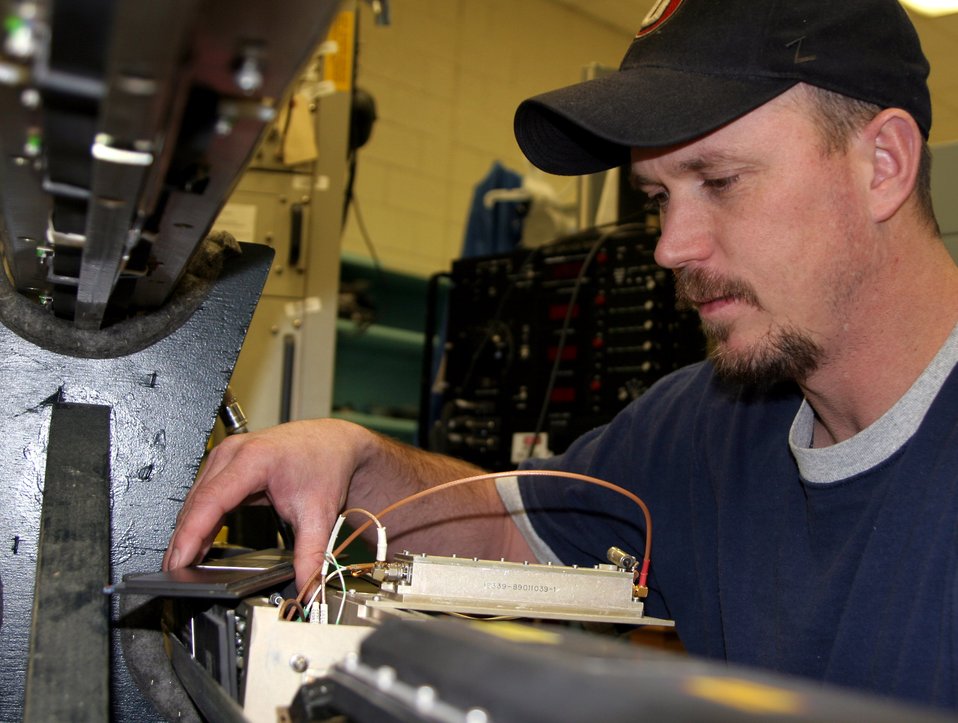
Pods help warfighters improve air combat proficiency

Shane Wright assesses a P4B mockup pod for power amp testing. He is an integrated electronic equipment repairer for the 309th Electronic Maintenance Group at Hill Air Force Base, Utah.